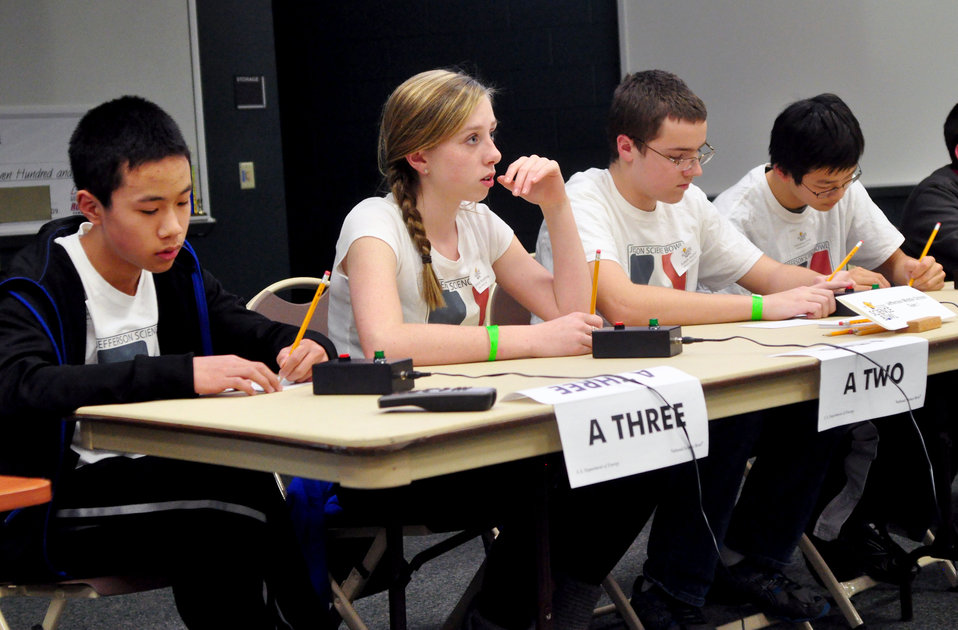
Jefferson Middle First Place DOE Middle School Science Bowl

14-017 DOE photo Lynn Freeny 2-1-2014 Oak Ridge Tennessee